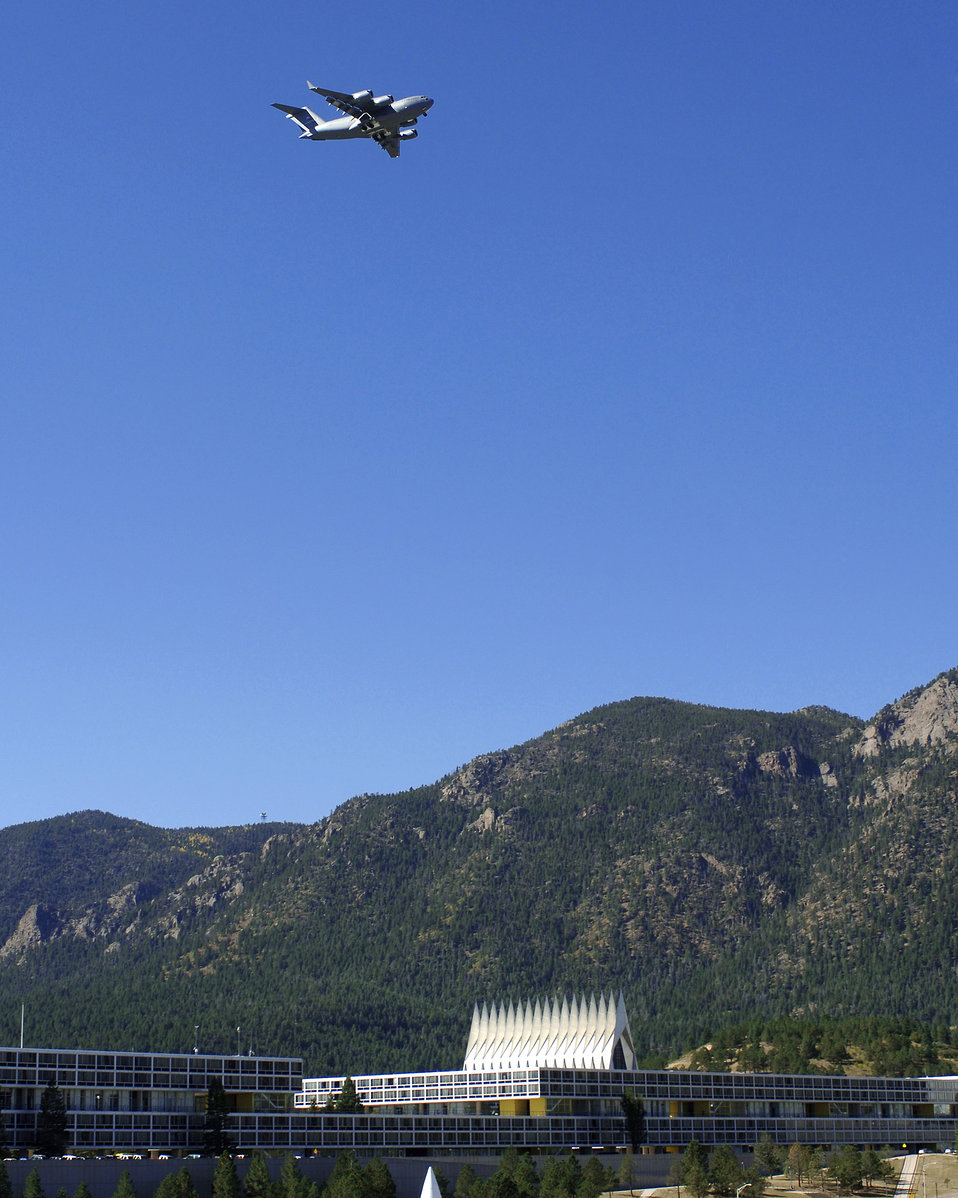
Commandant of cadets flies new C-17 Globemaster III home

Brig. Gen. Susan Y. Desjardins flies a newly accepted C-17 Globemaster III Oct. 2 over the U.S. Air Force Academy cadet area in Colorado Springs, Colo. General Desjardins accepted the aircraft into the Air Force's inventory at Boeing's facilities in Long Beach, Calif., and flew it from the Boeing facility to its new duty station with the 436th Airlift Wing at Dover Air Force Base, Del. The general, a command pilot with more than 3,800 flying hours in the C-17 and other aircraft, is the Air Force Academy commandant of cadets.